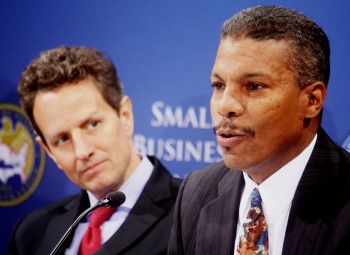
Treasury and SBA Host a Small Business Financing Forum

Charles Baker of MCB Lighting Solutions discusses his story as a small business owner.